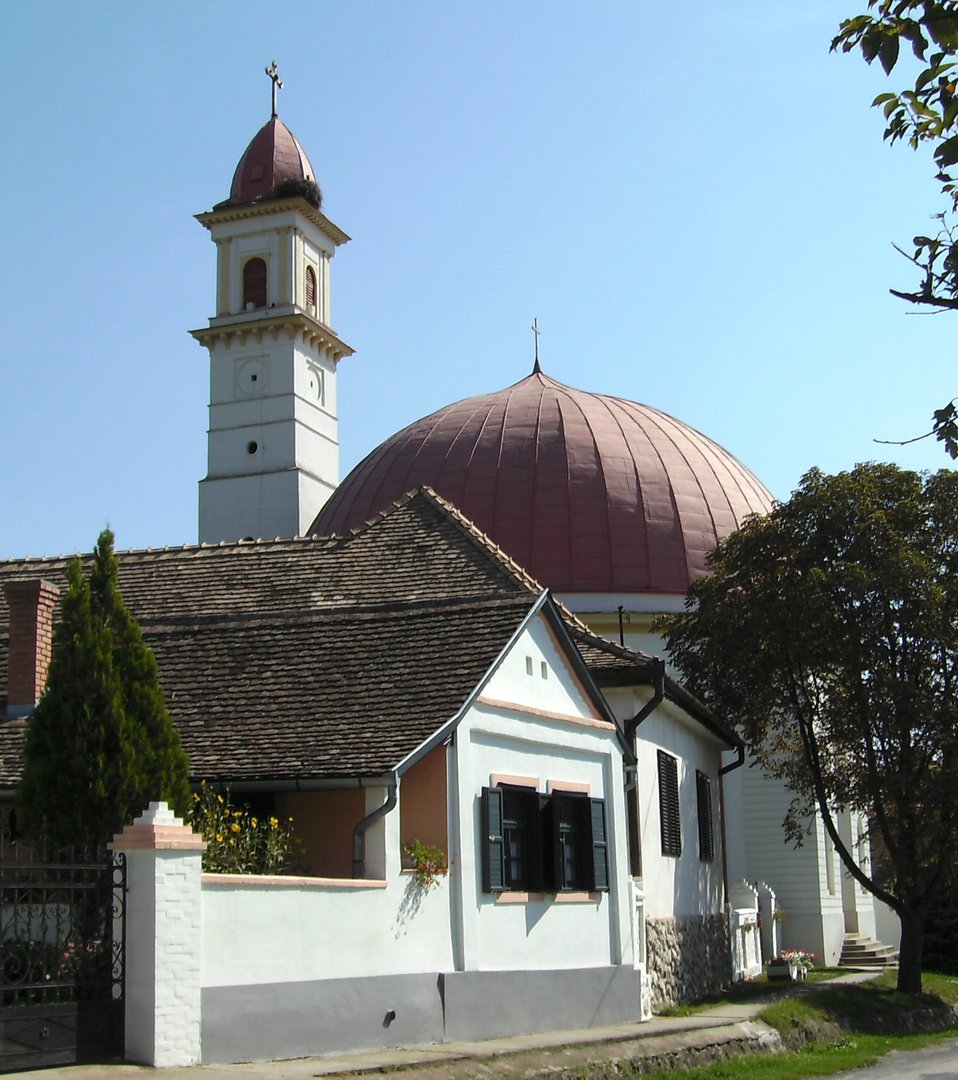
Magyar: A palkonyai Szent Erzsébet-templom